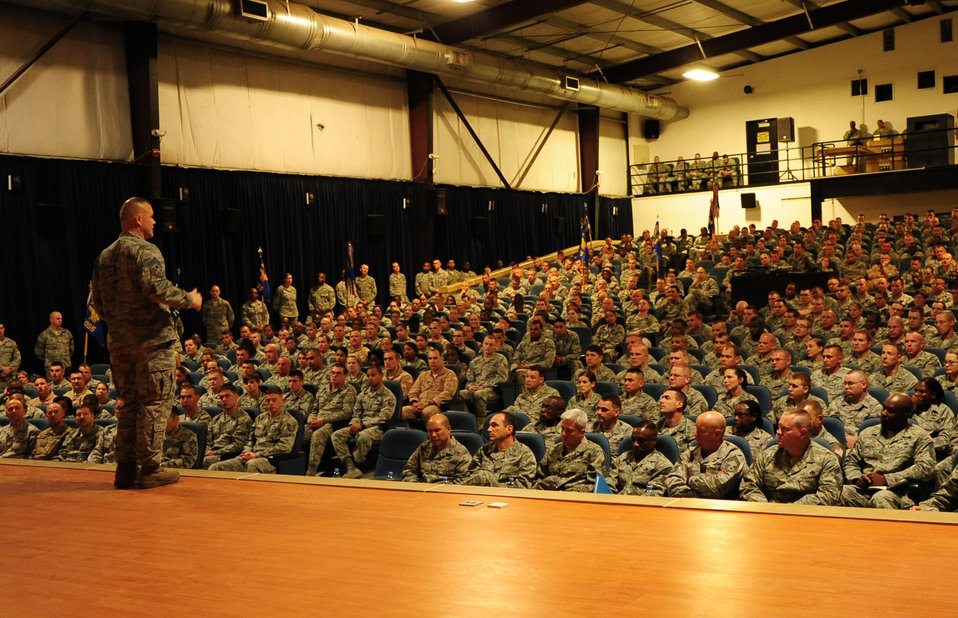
CMSAF talks resilience

Chief Master Sgt. of the Air Force James Roy talks with deployed Airmen during an enlisted all-call at a base in Southwest Asia on Jan. 31, 2012. Roy’s visit to the installation marked the first stop on a tour of Southwest Asia.